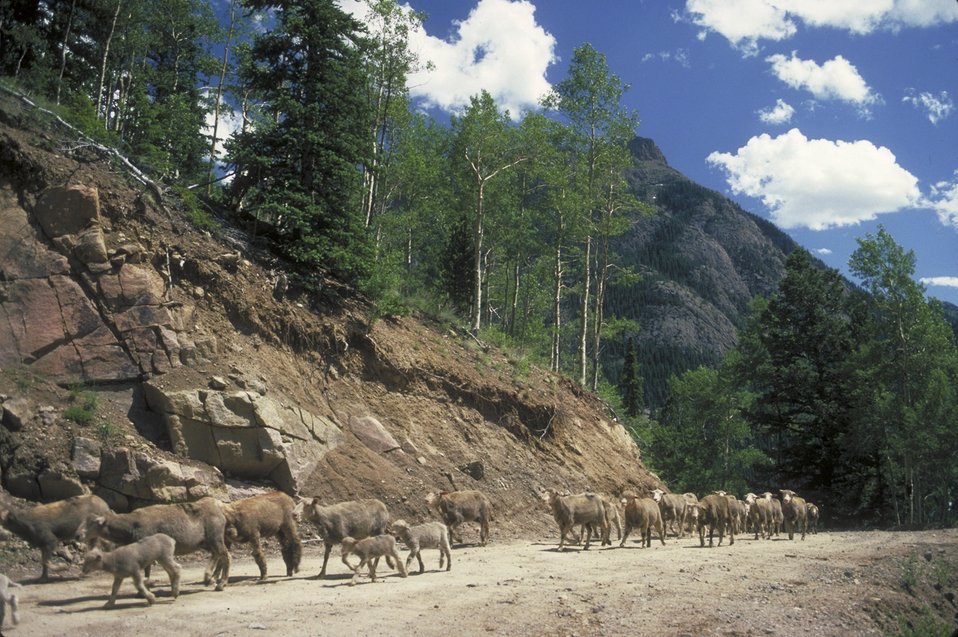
Sheep Drive